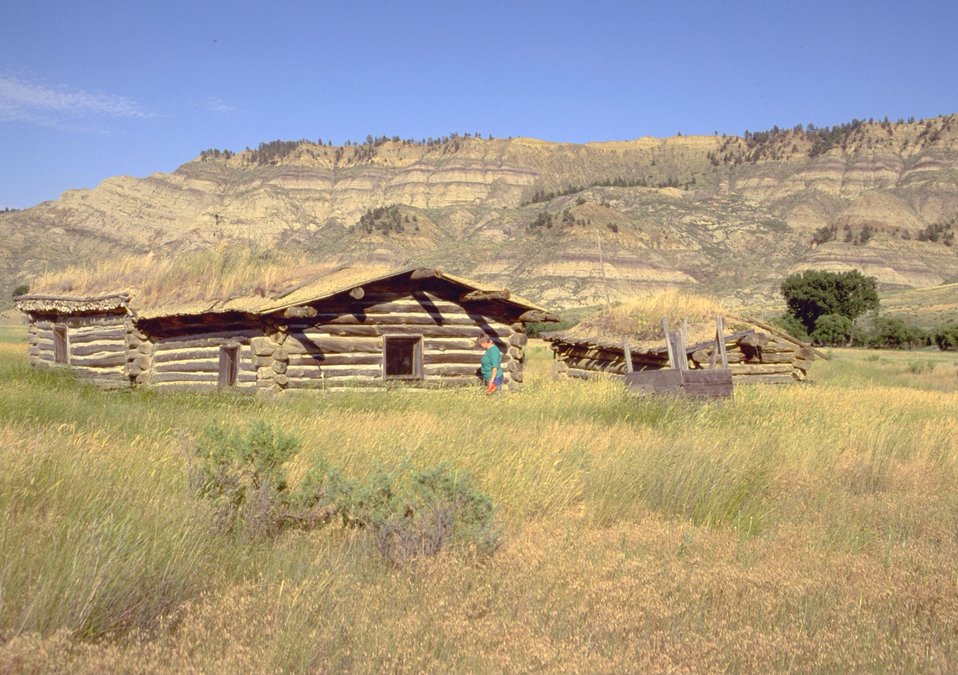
Missouri River with cabin